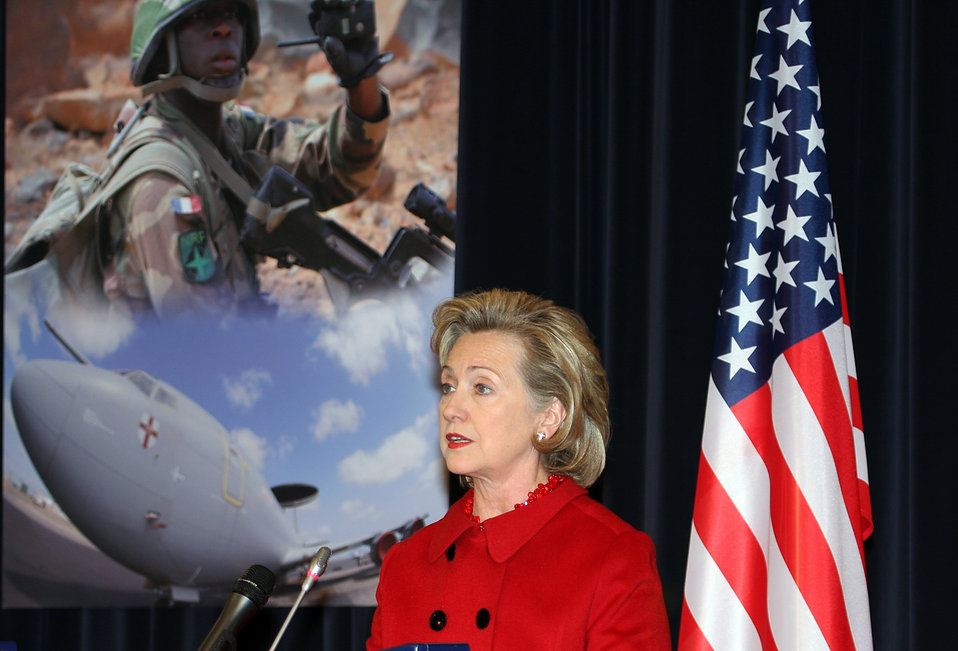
NATO Press Conference

U.S. Secretary of State Hillary Rodham Clinton meets with Belgian officials at Val Duchesse in Brussels, Belgium December 4, 2009.